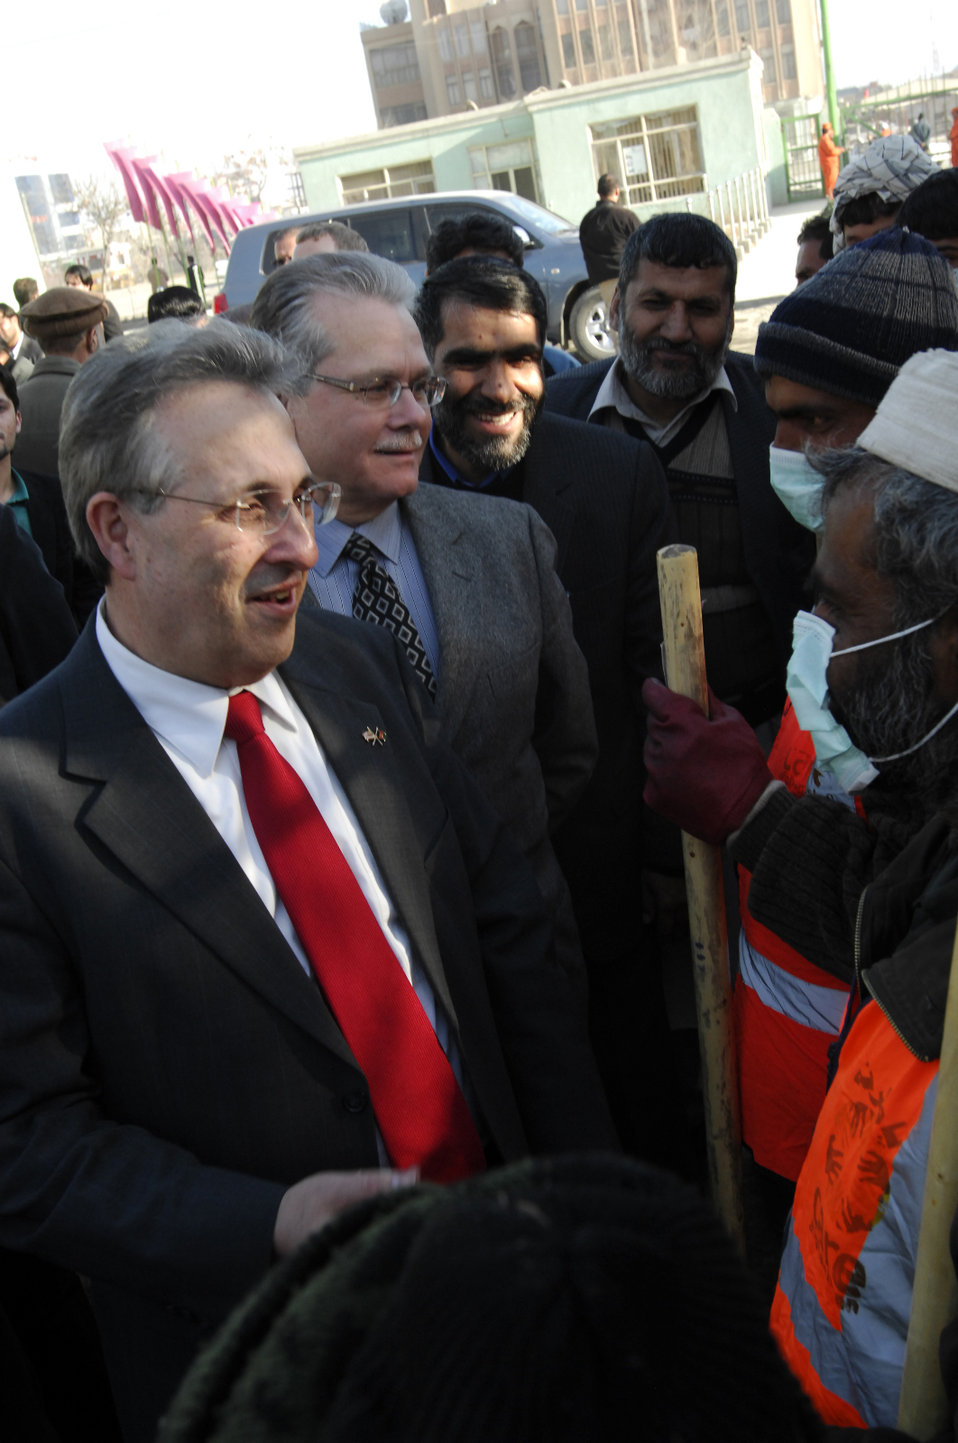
Care87